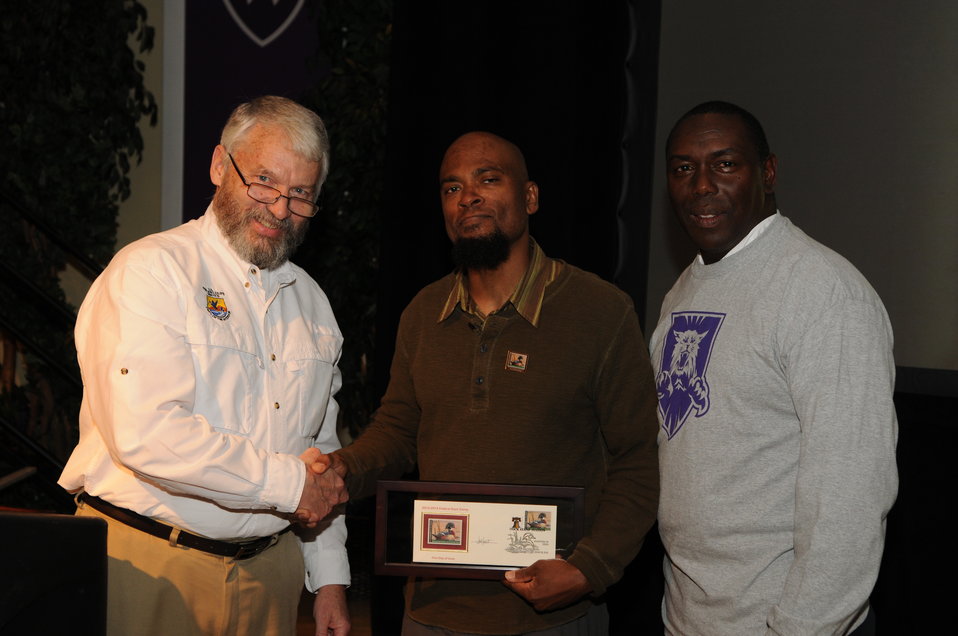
Judge Recognition

The U.S. Fish & Wildlife Service sponsored the 2012 Federal Duck Stamp Art Contest September 28 and 29 in Ogden, Utah, at Weber State University. A panel of five judges was responsible for choosing the art work used to design the 2013-2014 Migratory Bird Hunting and Conservation Stamp.